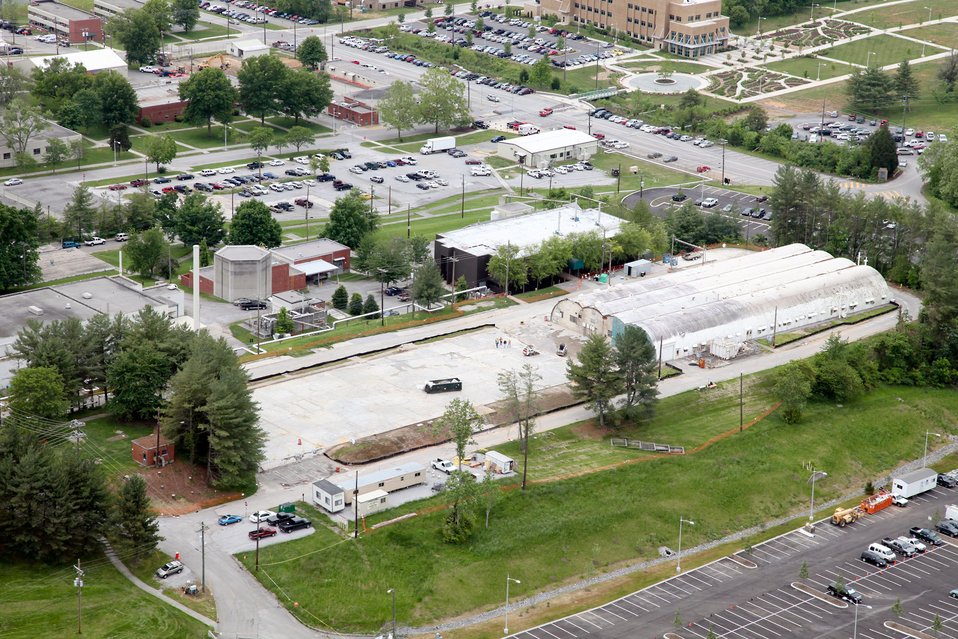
Demolition efforts under way at ORNL’s 2000 Complex

An aerial view shows the removal of the eastern side of the 2000 Complex. The western half will be down by November.